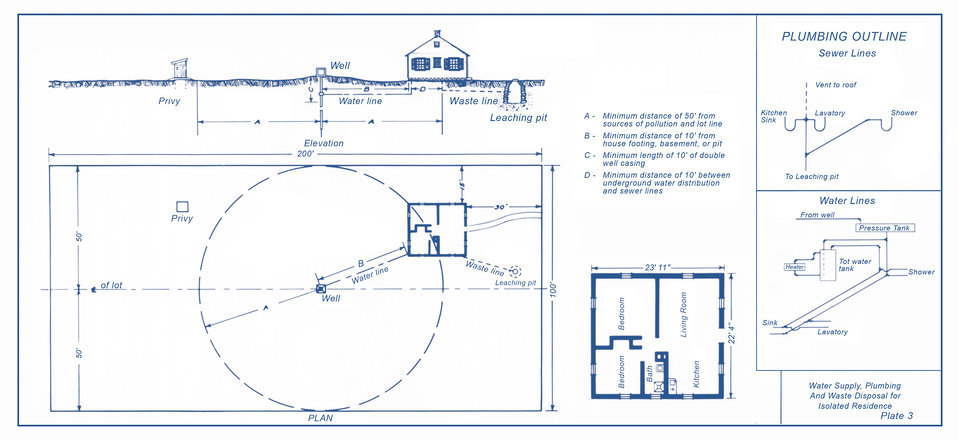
This historic 1938 diagram, which had been digitally enhanced and colorized, depicted the minimum allowable distances that should exist between a potable water supply, and sources of possible contamination. The purpose of these images and the accompanying training was focused on protecting water supplies from bacterial contamination due to incorrect disposal of waste, such as sewage, in order to prevent water-borne diseases.